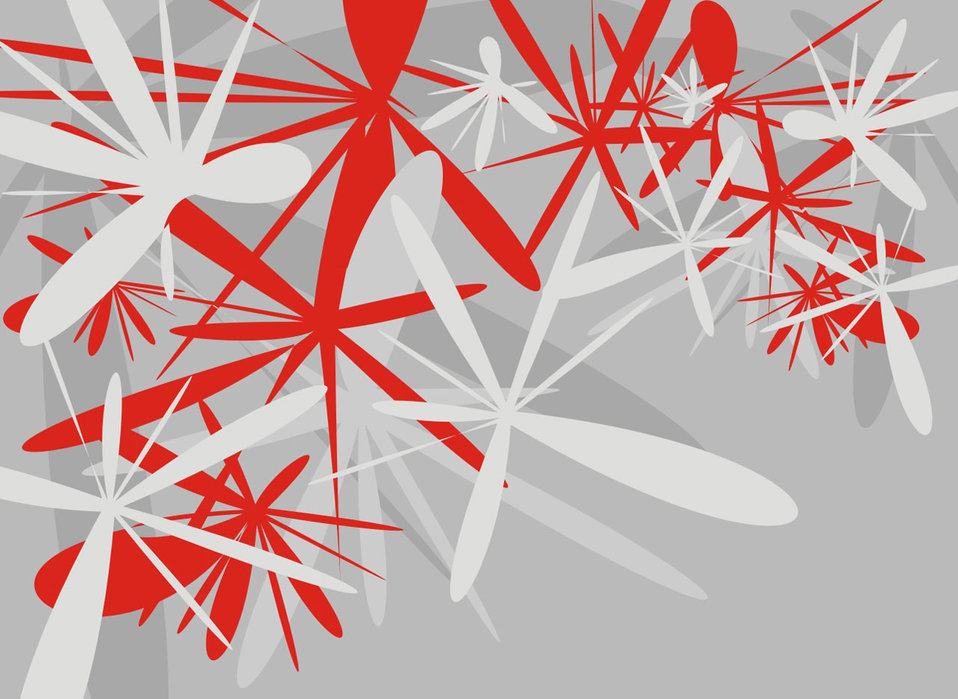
Crazy background in grey and red.